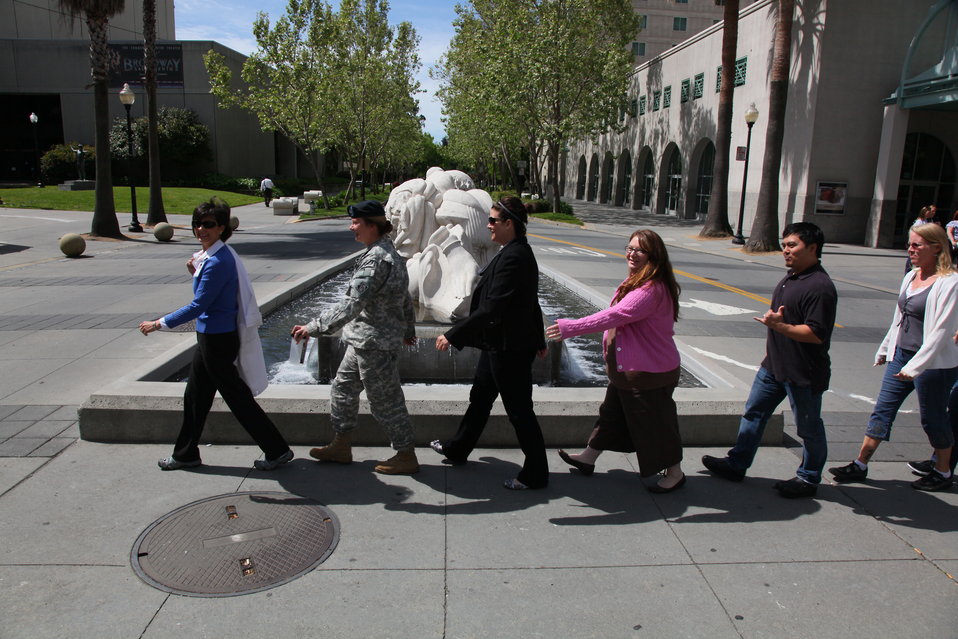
Walk at Lunch Day

SACRAMENTO, Calif. (April 27, 2011) -- Here comes the sun in Sacramento, just in time for “Walk at Lunch Day” at the U.S. Army Corps of Engineers Sacramento District’s headquarters April 27. In coordination with the district’s safety office, nurse Jan Luoma (far left) led a group of walkers around downtown Sacramento for thirty minutes of exercise. “Walk at Lunch Day” encourages employees to turn a working lunch into a walking lunch, and served as a kick-off for the Presidential Activity Lifestyle Award challenge, said Luoma. The challenge encourages 30 minutes of physical activity five days a week for six out of eight weeks, said Luoma, and includes over 50 activities ranging from dancing to yoga.